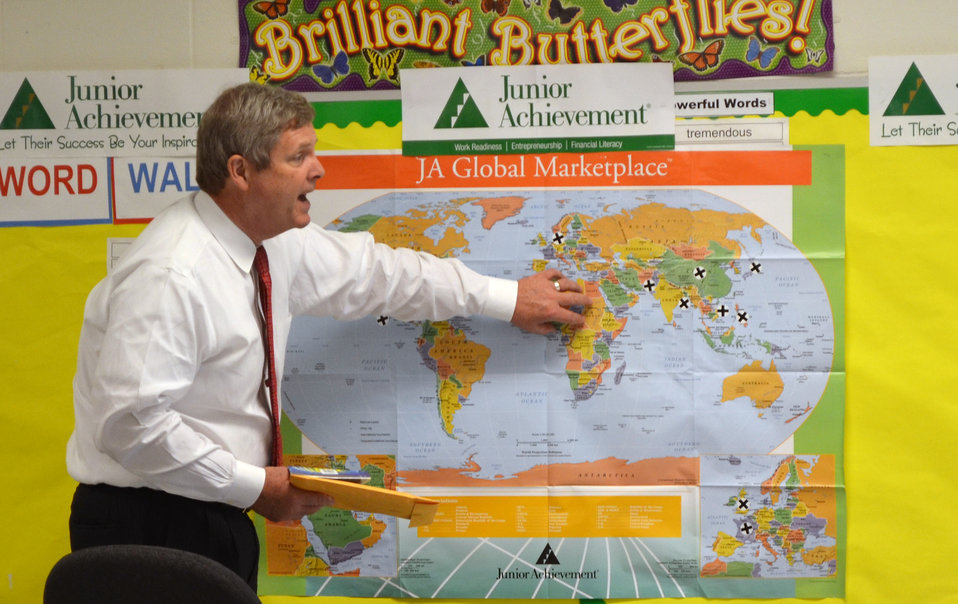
Agriculture Secretary Tom Vilsack shows students areas where the world’s wheat production occurs following a students question at the Baker County Schools in Newton, Georgia on Friday, May 5, 2012.